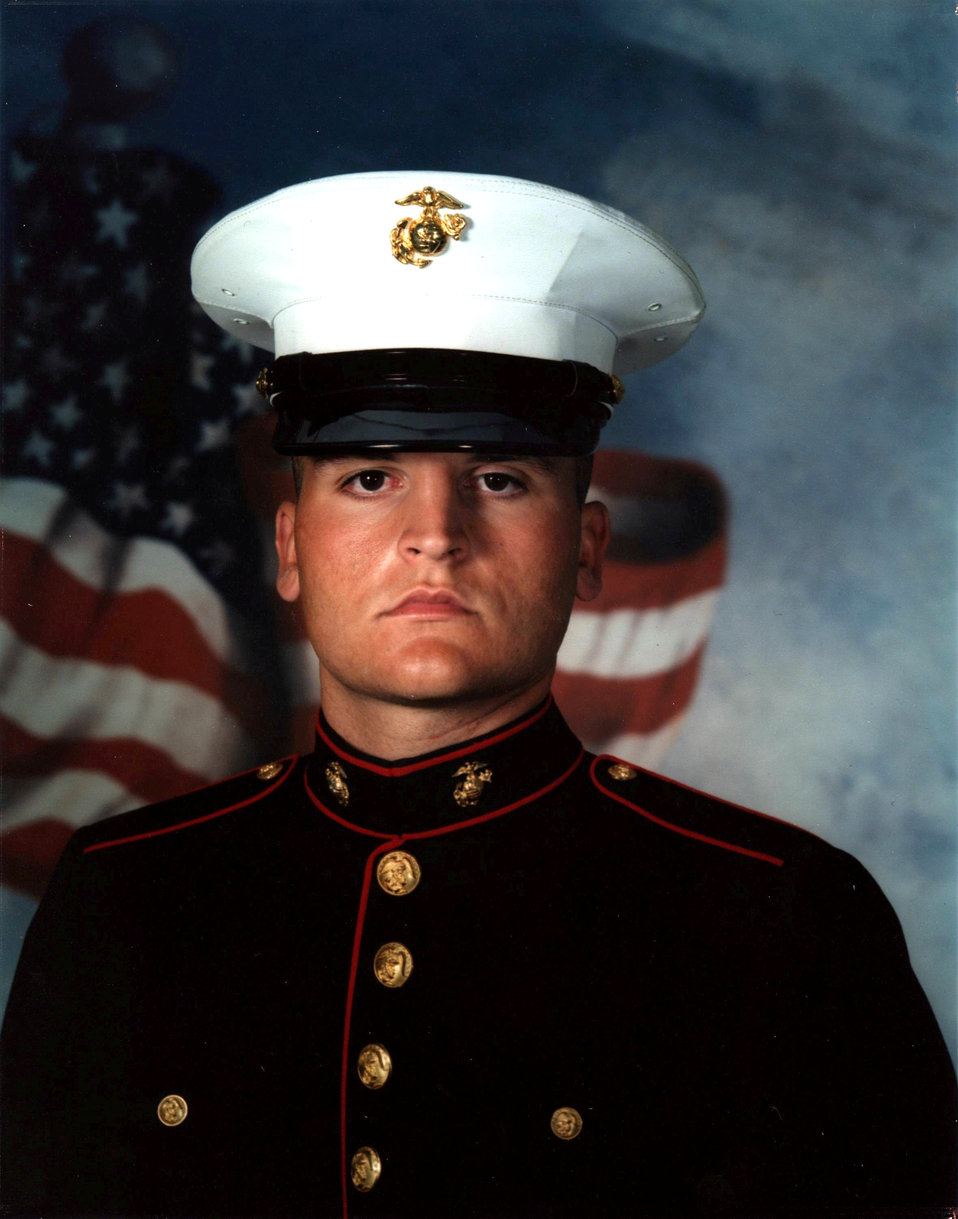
Chase Savage

After graduating from a rural high school in Mississippi, Chase Savage enlisted in the U.S. Marines Corps in 2003 at the age of 18. Growing up, Savage was active in sports and an avid outdoorsman. He felt that joining the military to assist in our country's efforts was a top priority in the wake of the terrorist attacks of September 11, 2001. Following boot camp, he spent several months training in his specialty as a rifleman before being deployed with the 24th Marine Expeditionary Unit to Fallujah, Iraq. Near the end of this deployment, on November 10, 2004, he was injured by an improvised explosive device (IED) while operating a machine gun in the turret of his Humvee. Savage was transported back to the United States where he underwent 10 months of recovery and ultimately lost a portion of his right arm as a result of the injury. After retiring from the Marine Corps, Savage returned to Mississippi to pursue a bachelor's of science degree in wildlife management at Mississippi State University. He graduated from MSU with honors in the spring of 2010 and immediately accepted a position with the U.S. Fish and Wildlife Service. He is currently stationed in Region 5 with the Office of Law Enforcement in Baltimore, Maryland. Located at the BWI Airport, Savage is a wildlife inspector where he interdicts illegal shipments of fish and wildlife being imported/exported to and from the U.S. and facilitates the movement of legal shipments regulated by the Service.